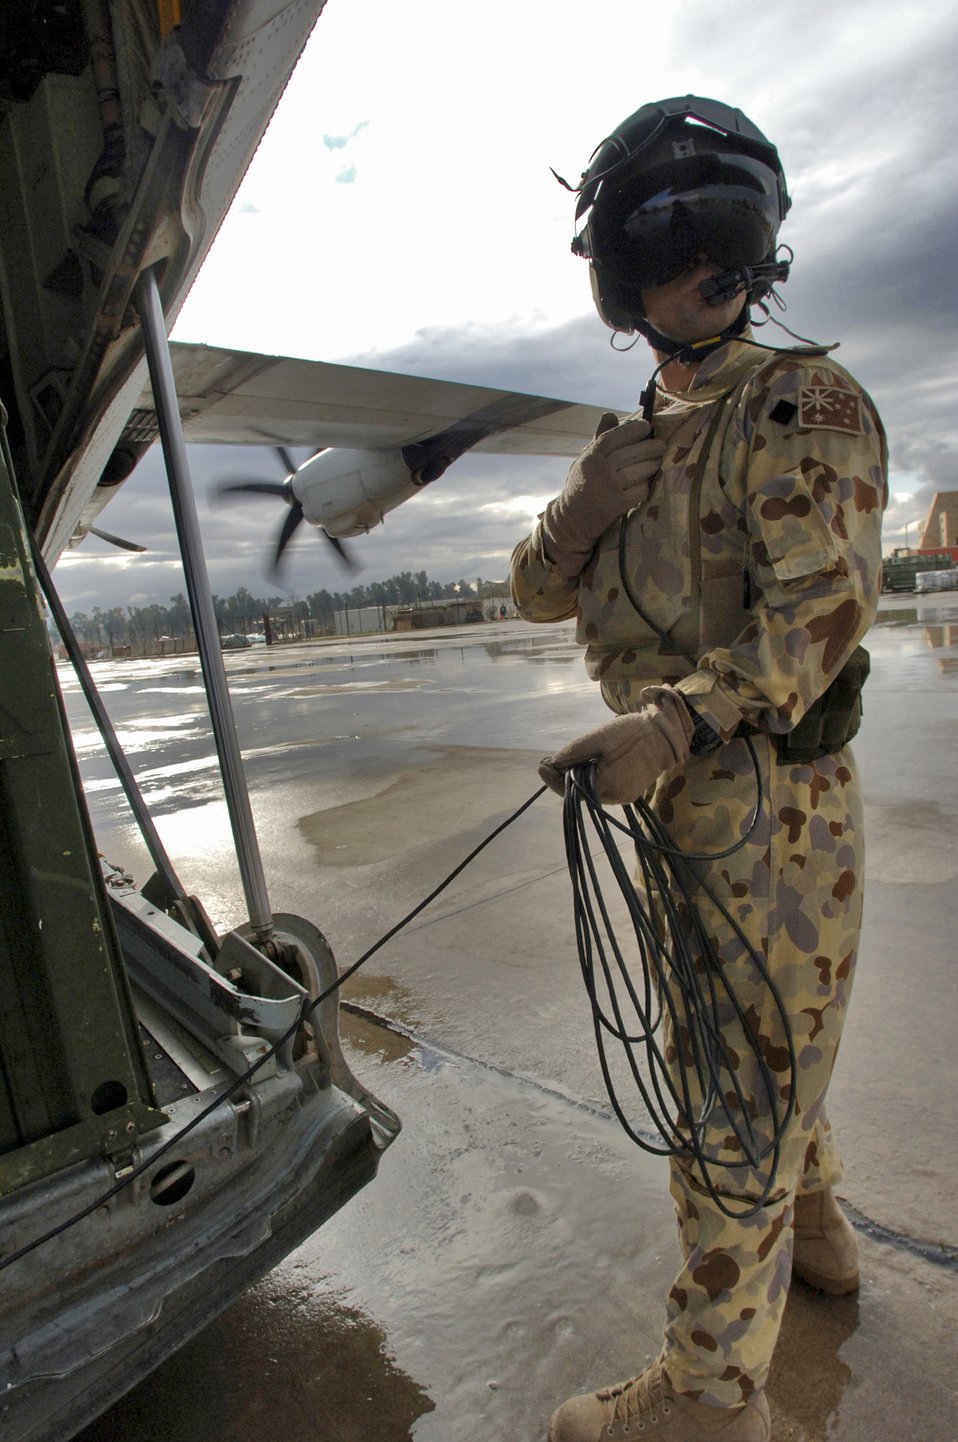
On a mission of mercy

MOSUL, Iraq (AFPN) -- Royal Australian Air Force Sgt. Errol Taylor monitors loading operations of the